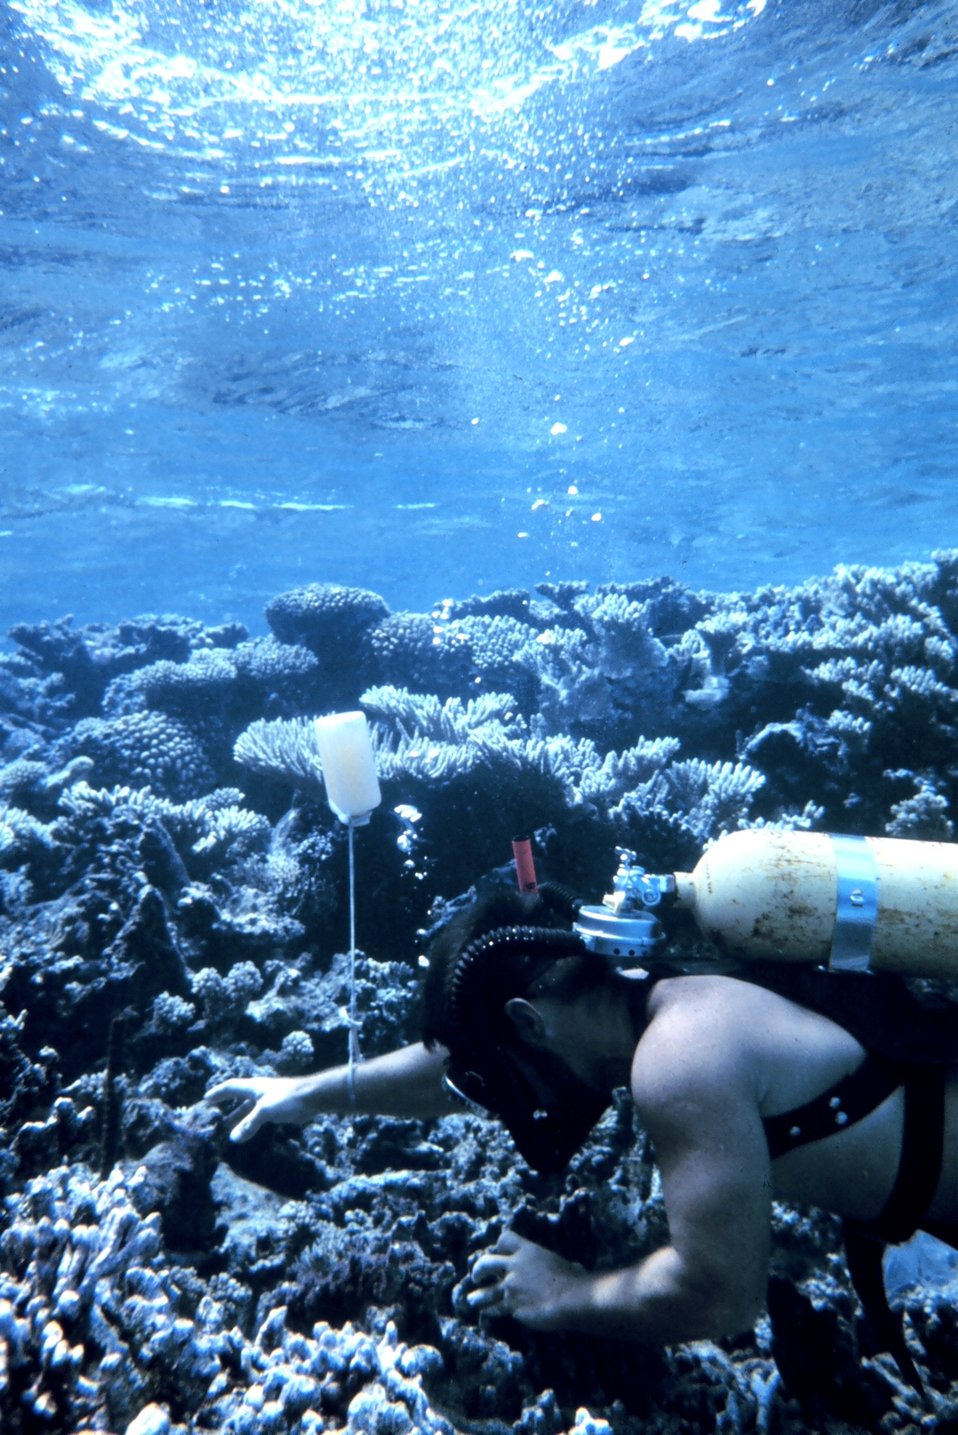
Scuba diving scientist inspecting corals